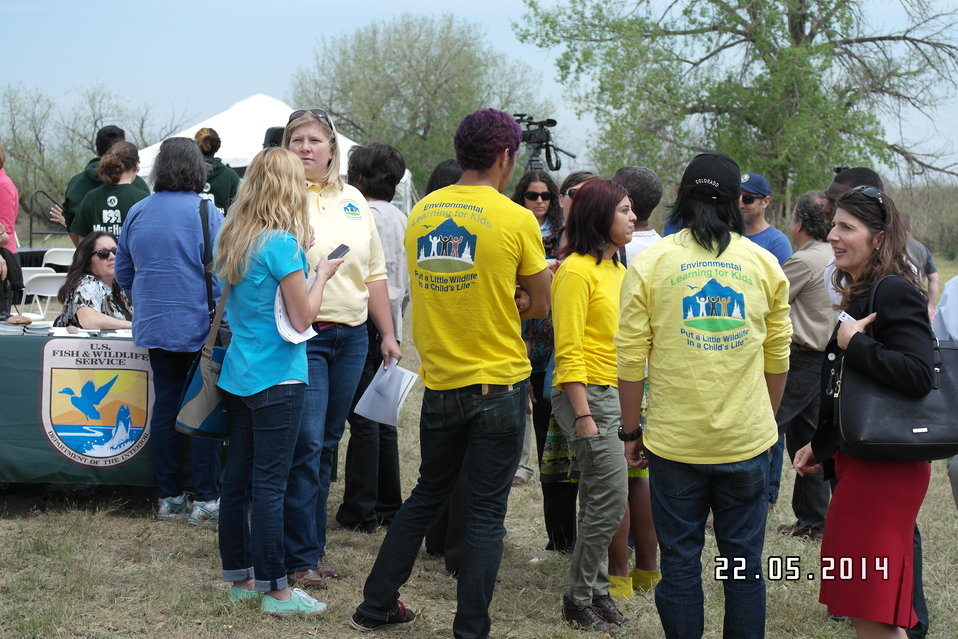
Secretary Jewell Announces $6.7 for Youth Conservation Jobs

Jewell made the announcement at an event at Rocky Mountain Arsenal National Wildlife Refuge outside Denver, Colorado, where she was joined by U.S. Department of Agriculture (USDA) Deputy Under Secretary for Natural Resources and the Environment Arthur “Butch” Blazer; Greg Knadle, Vice President for Government Relations of the National Fish and Wildlife Foundation (NFWF); Refuge Manager David Lucas and youth corps members of Groundwork Denver.